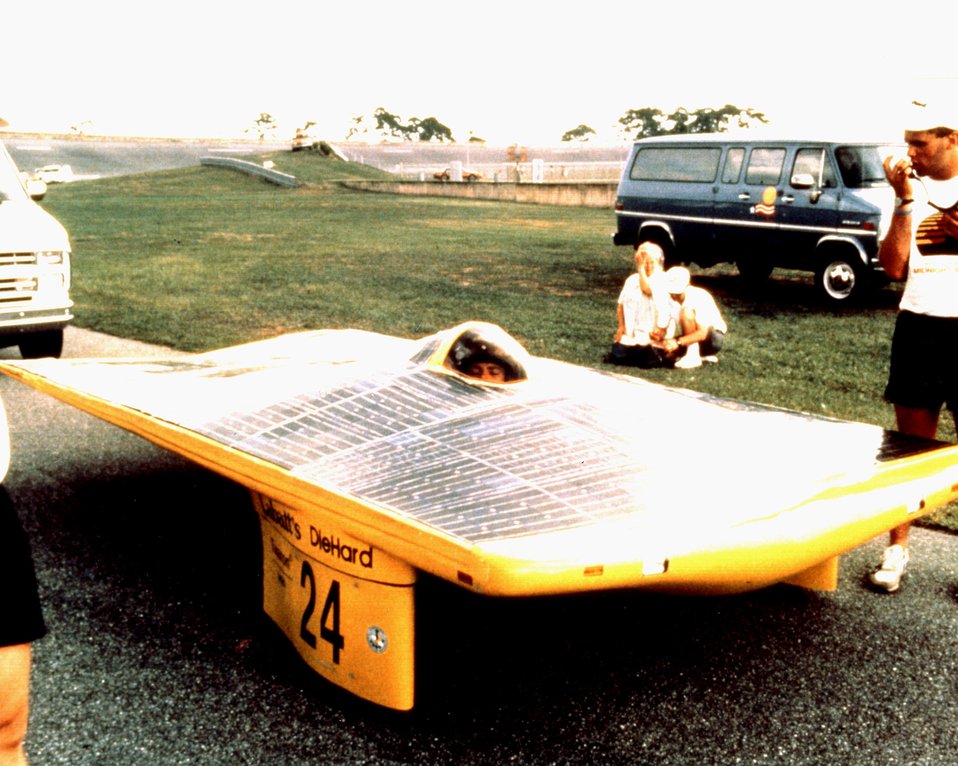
UNIVERSITY OF WATERLOO'S MIDNIGHT SUN, 24TH PLACE FINISHER.